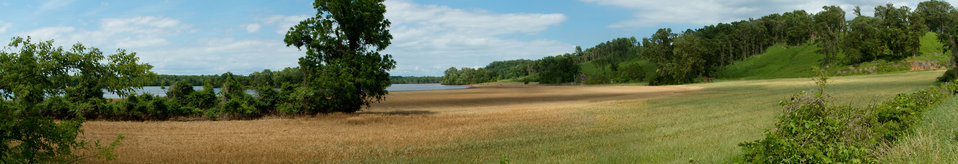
Virtual panorama of damaged crops seen from Highway 88 W near Porters Gap Rd; in Lauderdale County; TN, on Saturday; May 21; 2011.